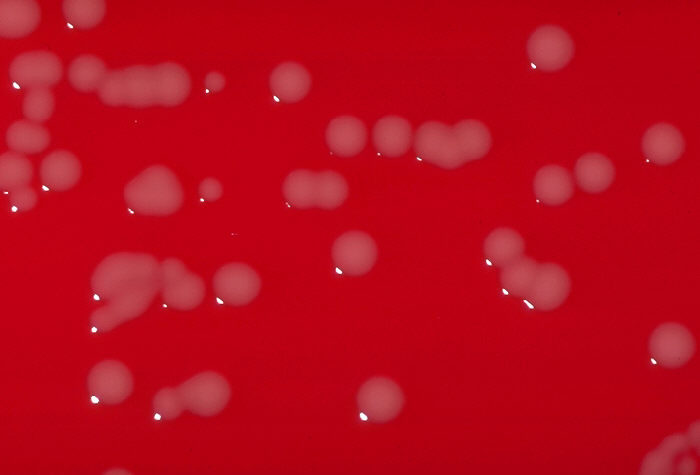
Blood agar plate culture of Corynebacterium minutissimum.